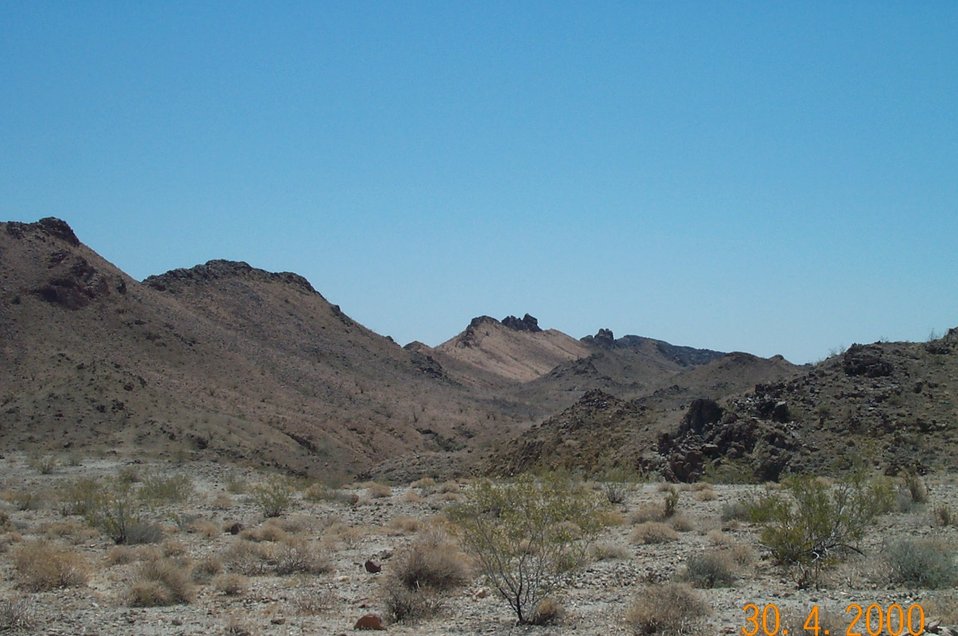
Desert landscape